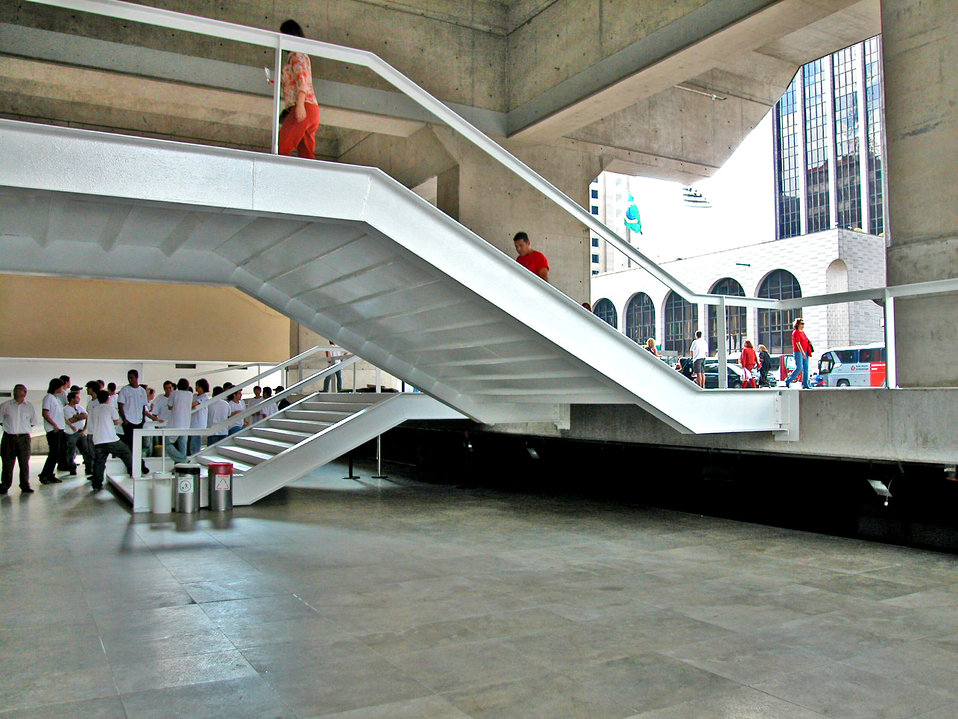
As was depicted in PHIL# 9046, the configuration of this stairway system allowed for the possibility of visually-impaired, or non-impaired individuals to injure themselves, while passing beneath the stairway, for there was nothing that would warn the passerby as to the presence of a low-hanging overhang. Even a walking stick would not come into contact with the overhang. As seen in PHIL# 9047 - 9049, the inclusion of aesthetically placed 'obstacles' such as a fountain, or bench seating for pedestrians, would act to prevent walkers from navigating inadvertently on a dangerous course underneath the stairway, thereby, reducing the possibility of head injuries.